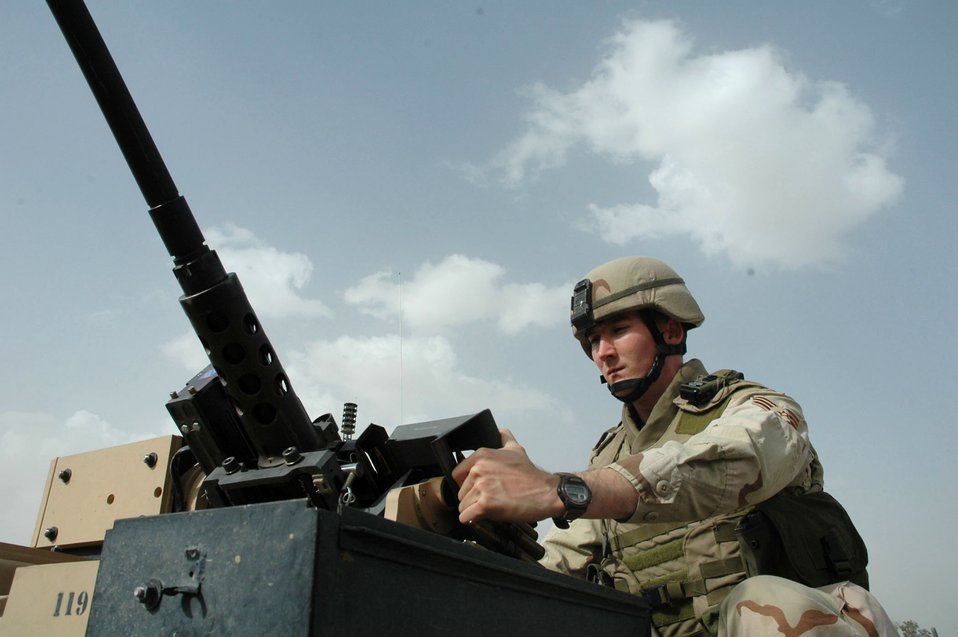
CROWS gets Airmen out of the turret

Senior Airman Jeffrey Oats loads ammunition into a machine gun mounted on the Common Remote Operated Weapon Station, or CROWS. This system allows Airmen to operate a variety of weapons remotely from inside the safety of a vehicle. Airman Oats is a gunner assigned to the 506th Expeditionary Security Forces Squadron and is deployed from Moody Air Force Base, Ga.